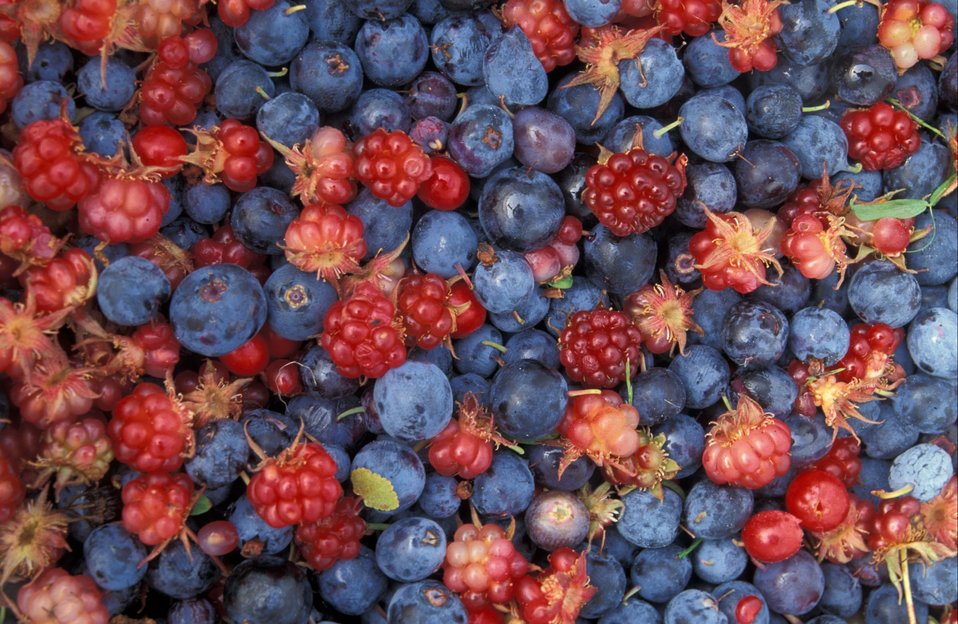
Wild berries, Innoko NWR

Wild berries gathered at Innoko National Wildlife Refuge (http://innoko.fws.gov) in Alaska make a colorful display. (USFWS)